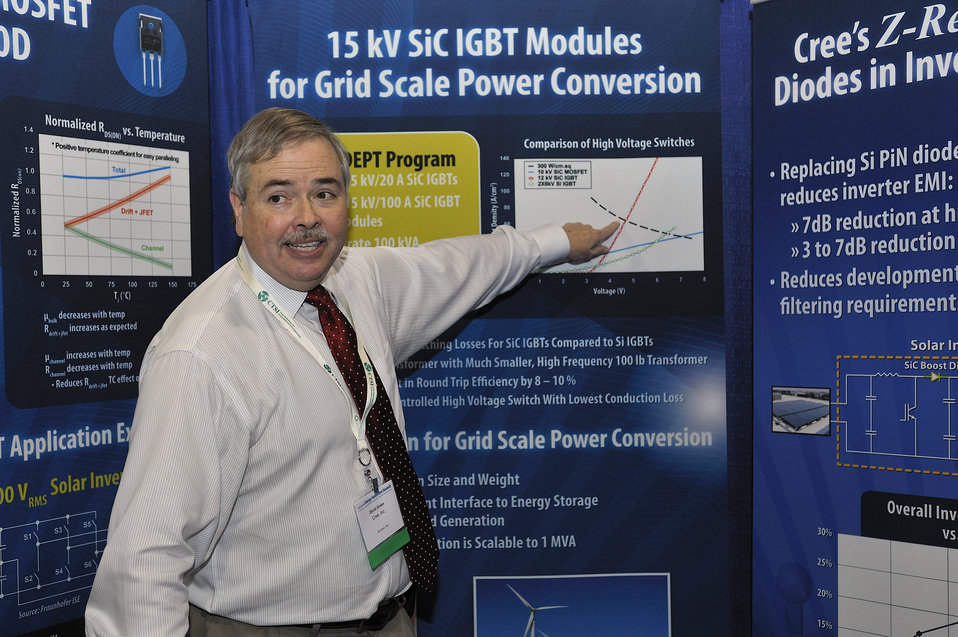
ARPA-E Energy Innovation Summit 2011, 47 of 83

Booth at the Summit's Technology Showcase.